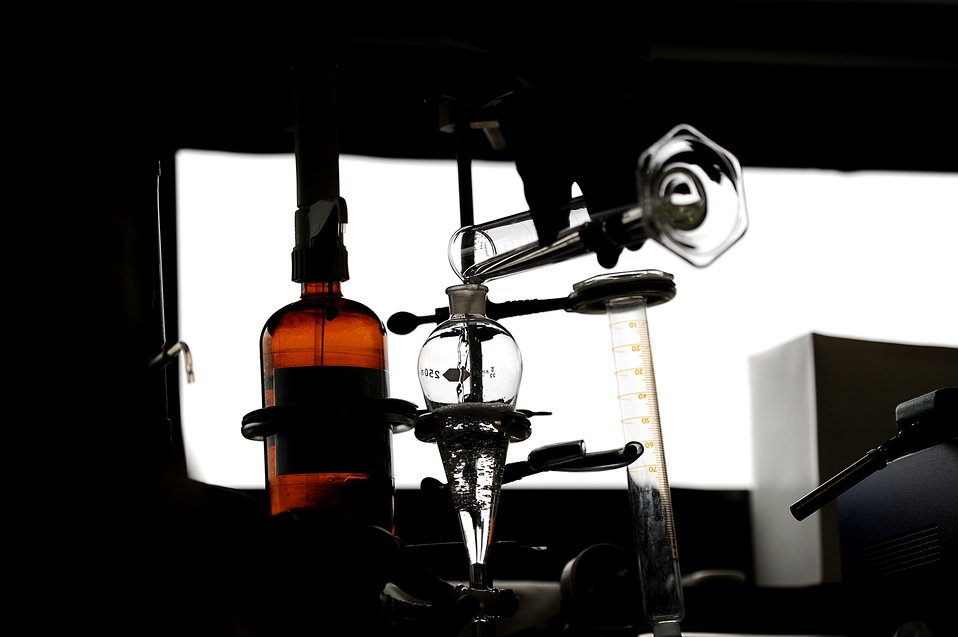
Air Force Research Laboratory

Capt. Michael Cole performs fuel quality assurance testing Feb. 8, 2012, at Wright-Patterson Air Force Base, Ohio. Cole is the deputy chief of the Laboratory Division at the Air Force Research Laboratory.